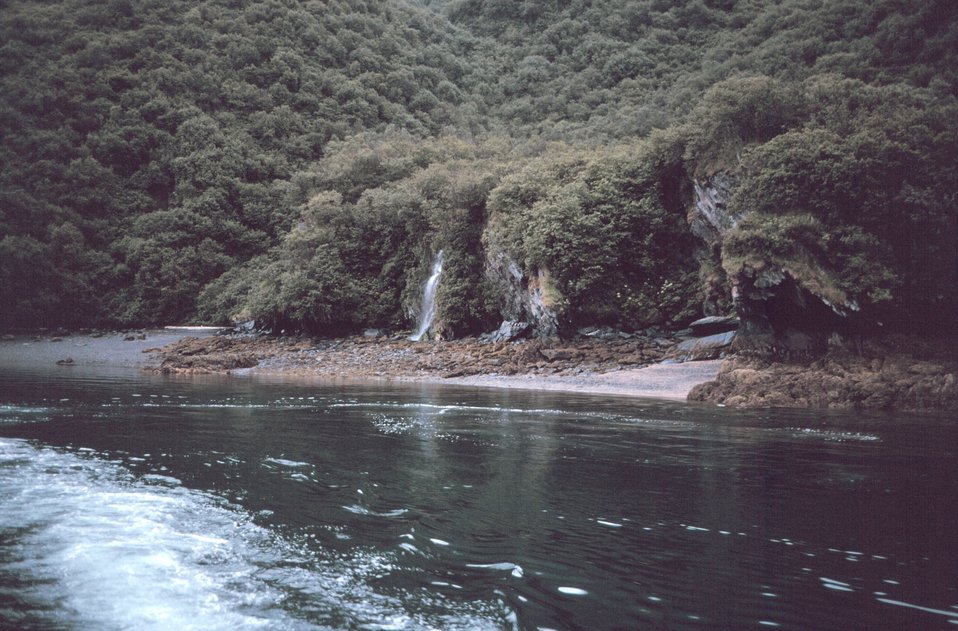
A small cove on Piridon Bay.